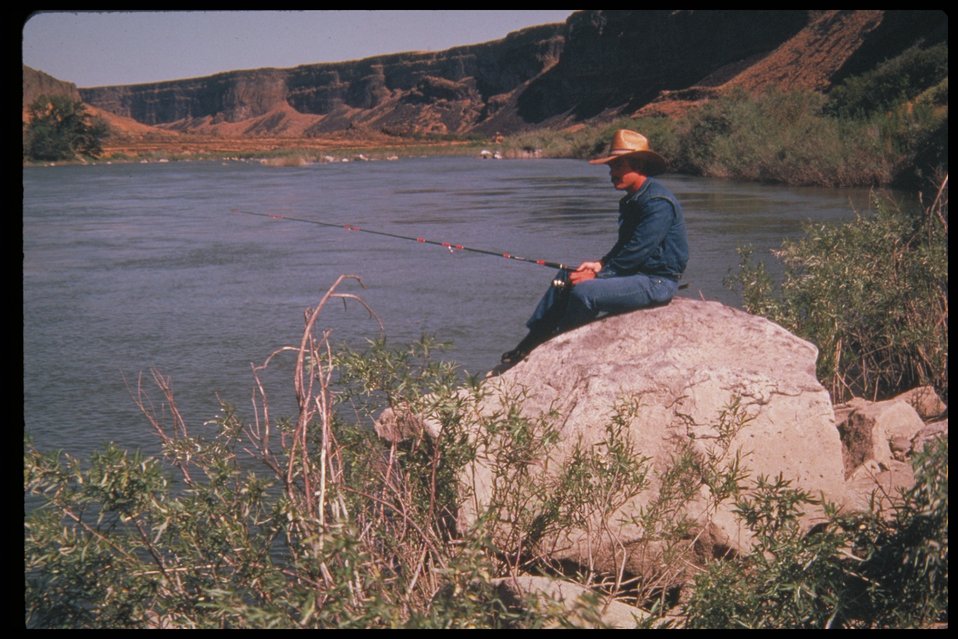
Fishing in the Birds of Prey Canyon Birds of Prey National Conservation Area BOP Owyhee Field Office LSRD Lower Snake River District